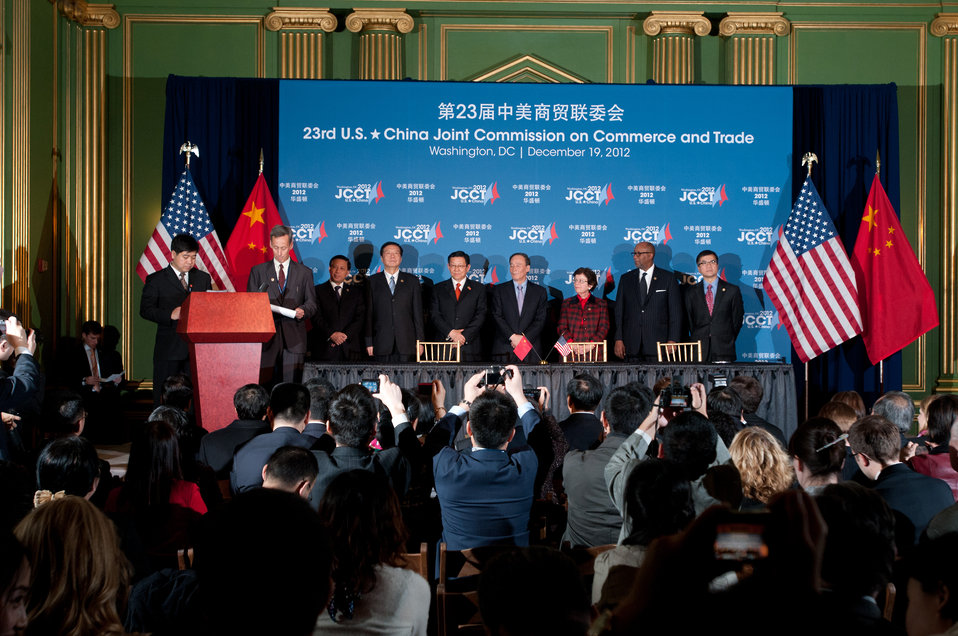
Journalists at a press conference, clamor to photograph the principal leaders from the Chinese delegates and U.S. hosts the 23rd Session of the U.S. China Joint Commission on Commerce and Trade (JCCT) held in the Andrew W. Mellon Auditorium in Washington, D.C. on Wednesday, Dec. 19, 2012. (L to R China’s Ambassador to the U.S. Zhang Yesui, Vice Minister of Industry and Information Technology Liu Lihua, Chinese Minister of Commerce Chen Deming, Chinese Vice Premier Wang Qishan, Acting U. S. Commerce Secretary Rebecca Blank, U.S. Trade Representative Ron Kirk and U.S. Ambassador to China Gary Locke). The JCCT holds high-level plenary meetings on an annual basis to review progress made by working groups that focus on a wide variety of trade issues. These working groups meet throughout the year to address topics such as intellectual property rights, agriculture, pharmaceuticals and medical devices, information technology, tourism, commercial law, environment, and statistics.